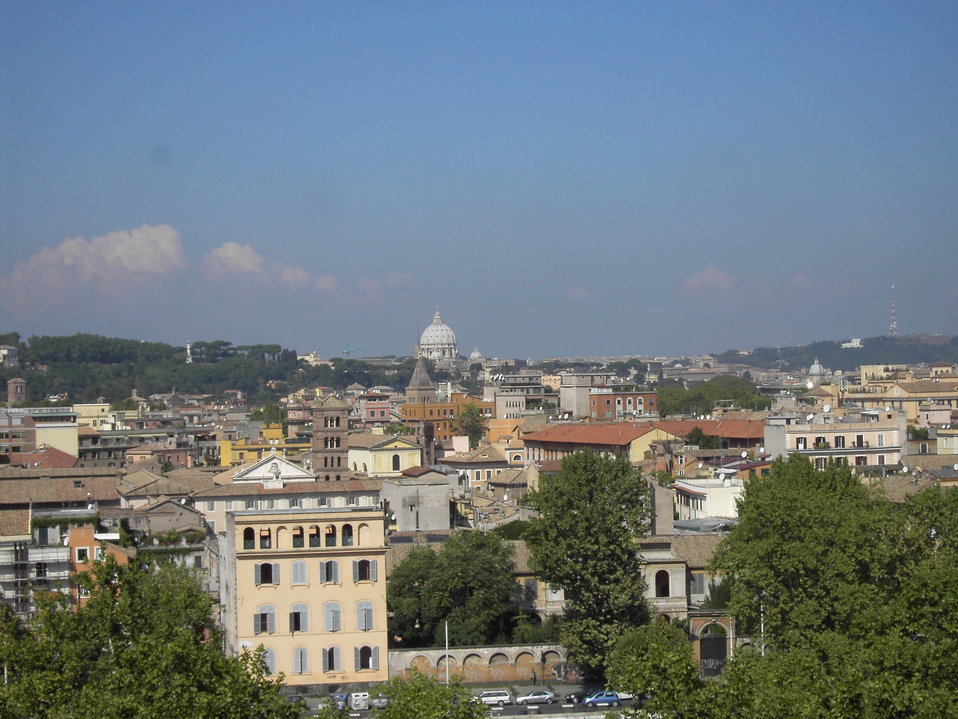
Dal giardino degli aranci - tutta roma